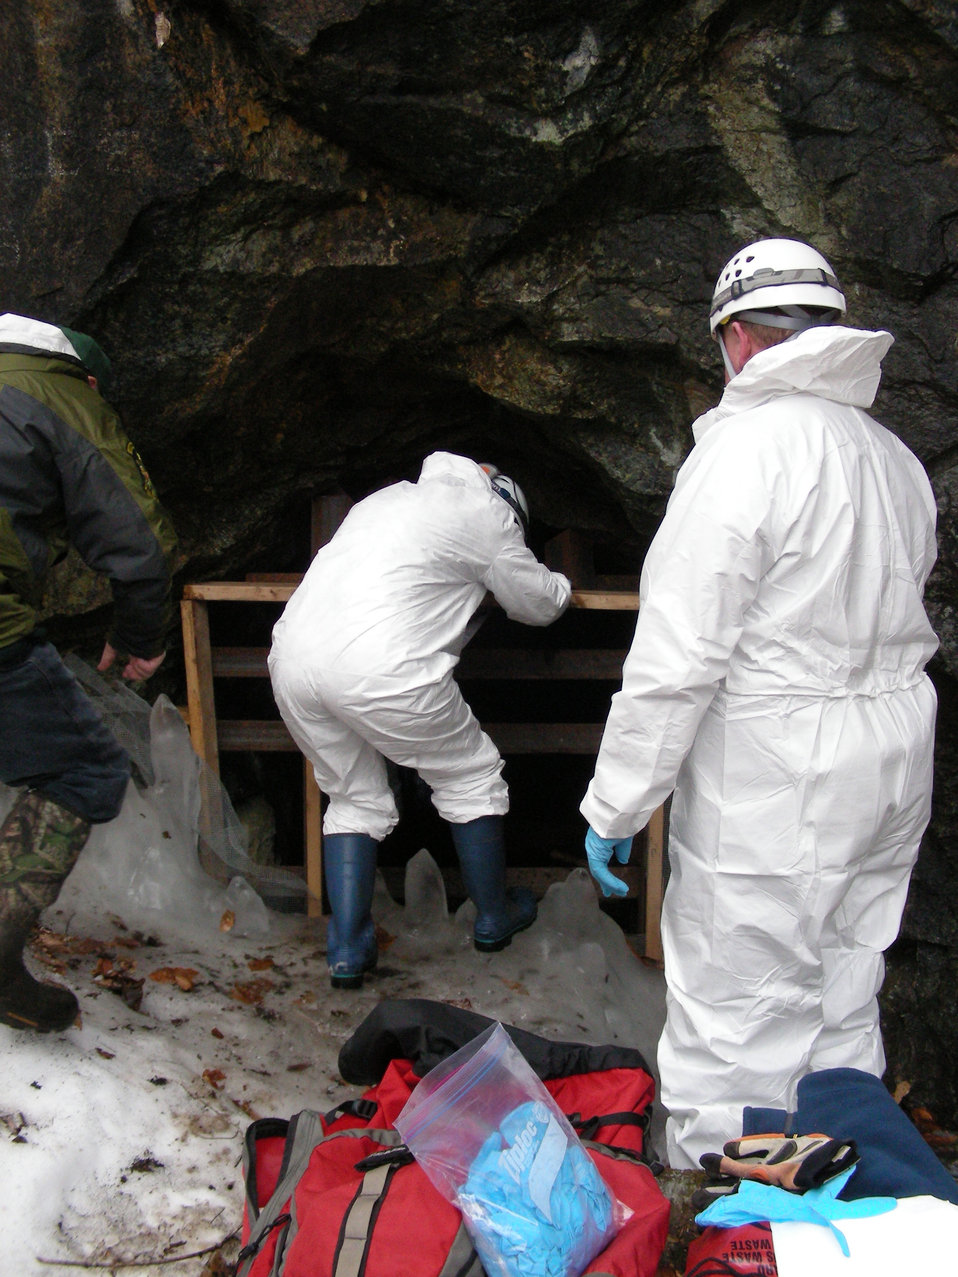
Biologists entering the mine

Service and State biologists enter Greeley Mine, Vermont, March 26, 2009.